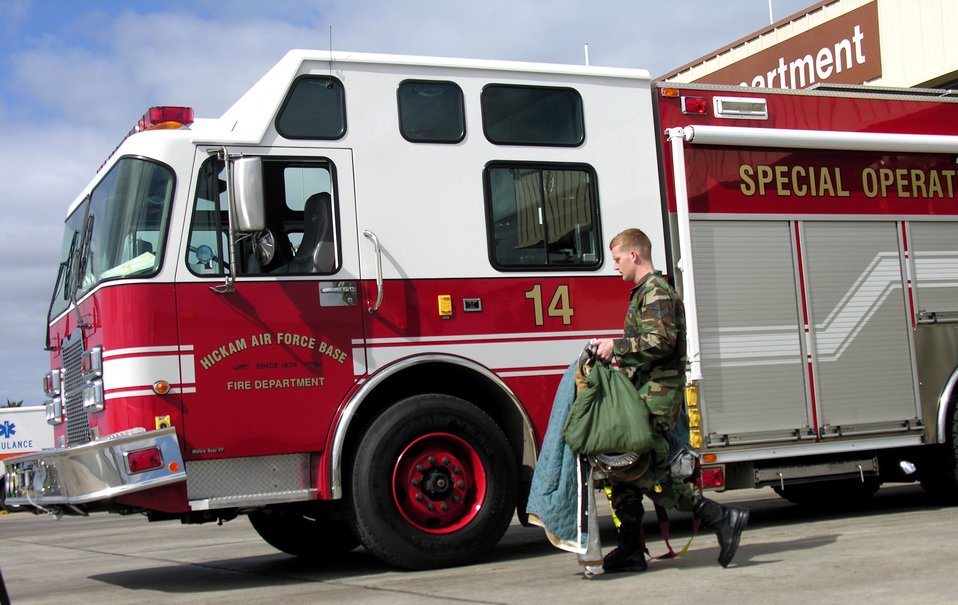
Serving through the season: Senior Airman Alan Leckie

Senior Airman Alan Leckie drops his gear by a fire truck at Hickam Air Force Base, Hawaii. He is a firefighter assigned to the 15th Civil Engineer Squadron.